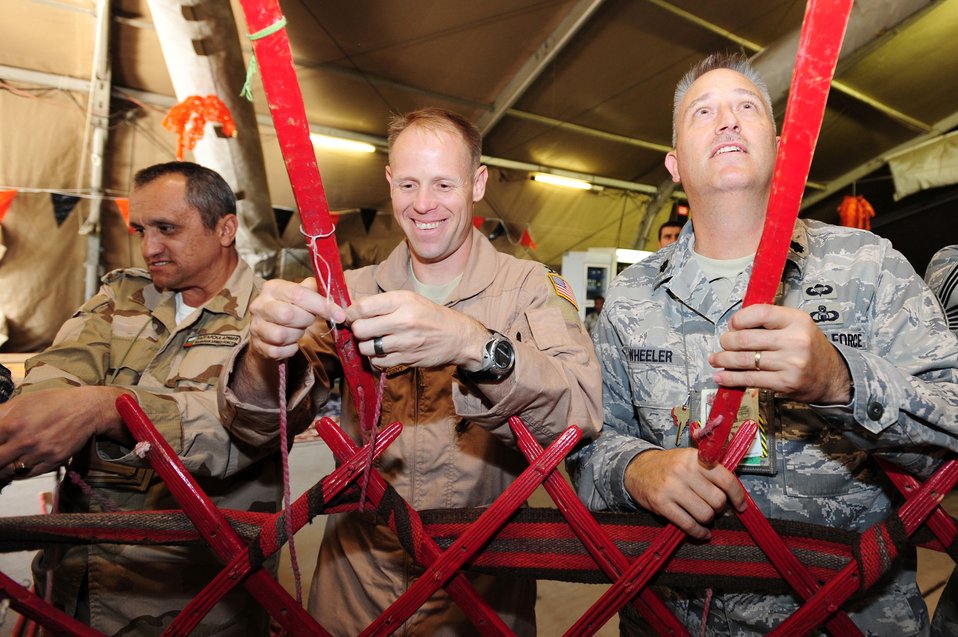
Airmen learn traditions during Kyrgyz Cultural Day

Col. Blaine Holt, 376th Air Expeditionary Wing commander, and Lt. Col. Christopher Wheeler, 376th Expeditionary Mission Support Group deputy commander, along with a coalition partner construct a traditional Kyrgyz yurt at the Transit Center at Manas, Kyrgyzstan, as part of Kyrgyz Culture Day recently.